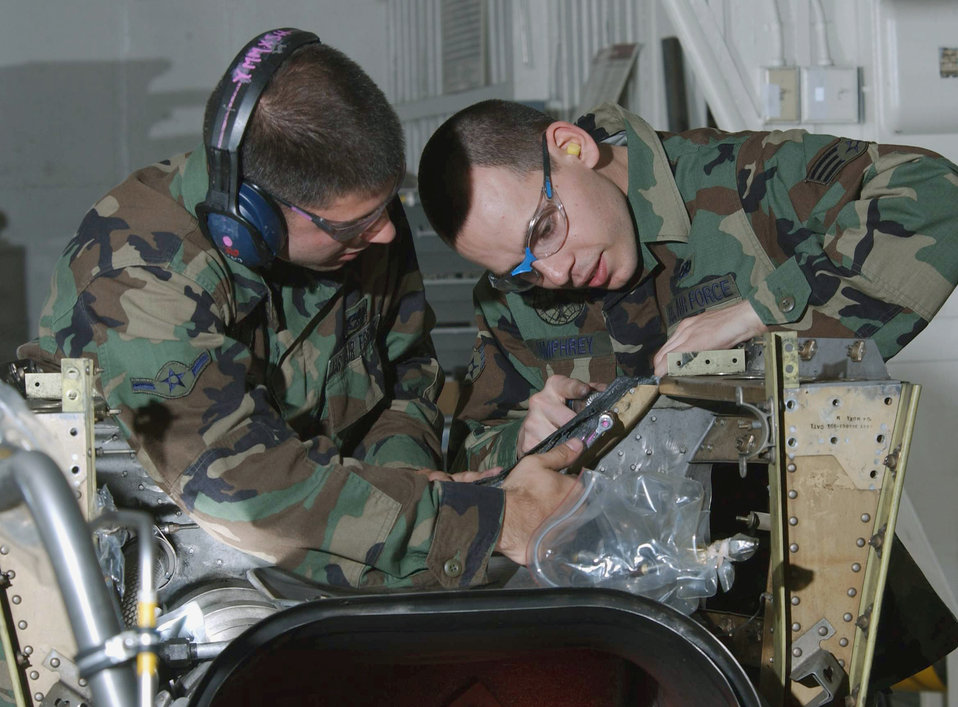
Routine maintenance

YOKOTA AIR BASE, Japan -- Airman Matthew DiPasquale (left) and Senior Airman Nicholas Humphrey replace the seal on a C-130 Hercules aircraft engine frame during routine maintenance here. Both airmen are assigned to the 374th Maintenance Group's aircraft structural maintenance element. The element is responsible for structural repair and corrosion prevention of assigned C-130 Hercules aircraft here and more than 200 transit planes that stop over yearly.